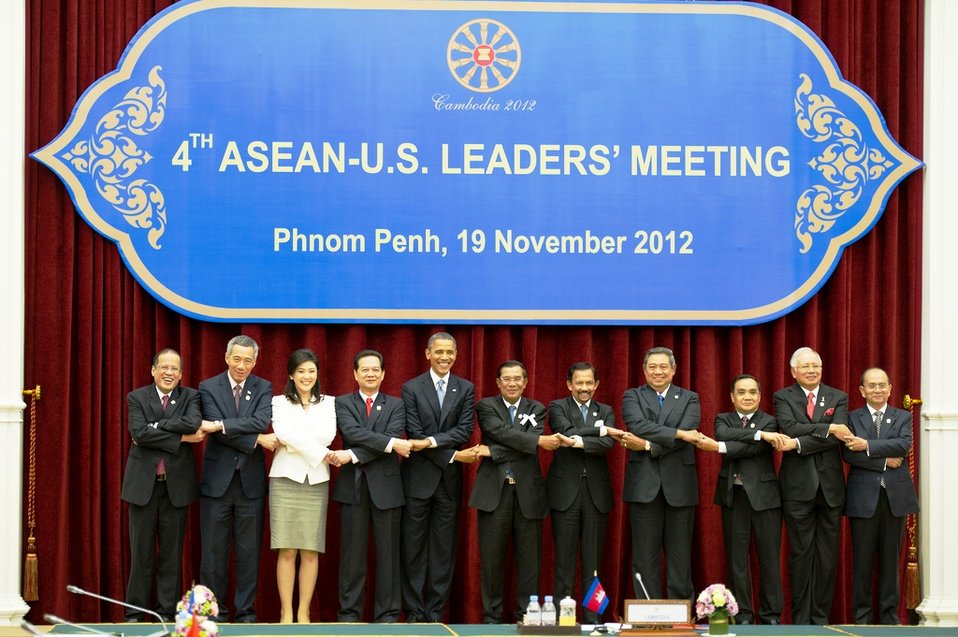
President Obama Poses for the ASEAN-U.S. Leaders' Meeting Family Photo

U.S. President Barack Obama poses for the ASEAN-United States Leaders' Meeting family photo at the Peace Palace in Phnom Penh, Cambodia, November 19, 2012. President Obama is the first U.S. President to visit Cambodia.